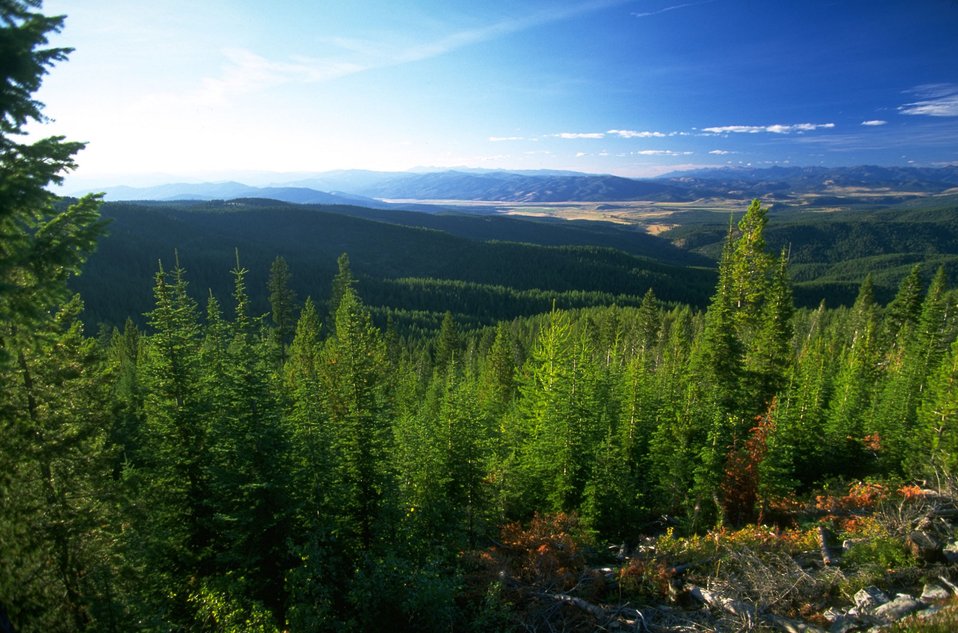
Garnet Back Country Byway--view from overlook